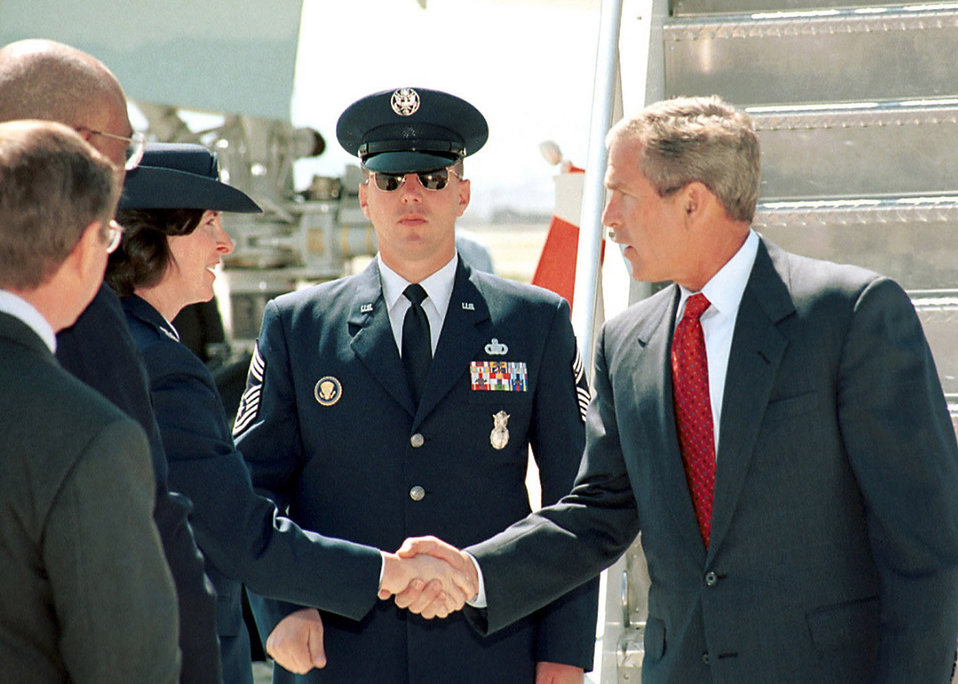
Bush visit

KIRTLAND AIR FORCE BASE, N.M. -- Col. Jan. D. Eakle, 377th Air Base Wing commander, welcomes President George W. Bush Aug. 15. The president visited the Griego Elementary School, the Hispanic Chamber of Commerce and the recently opened Barelas Job Opportunities Center in Albuquerque. He greeted other senior leaders of the base on his departure later that evening. Chief Master Sgt. Ovila Gagnon, chief of presidential aircraft security is behind the president and colonel.